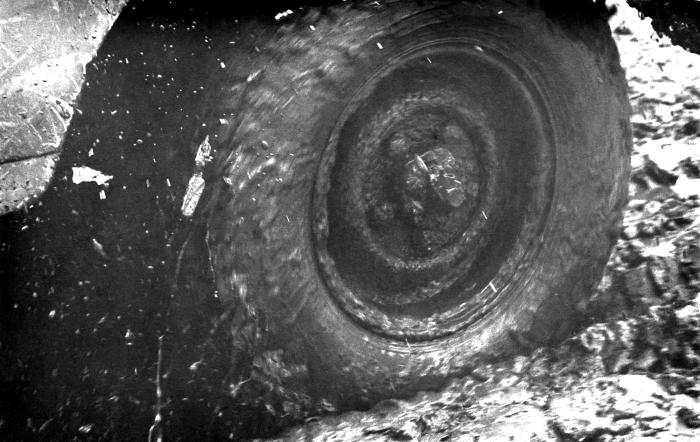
This photograph, by Pierre Claquin, M.D., B.A.C., who at the time was a member of the World Health Organization's Smallpox Eradication Program, was provided by former E.I.S. officer, Stanley O. Foster M.D., M.P.H., and was one of a series entitled 'The Story of One Smallpox Jeep', which depicted the travails faced by the jeep, and its occupants of public health practitioners, as they road through the Bangladesh countryside in an attempt to eradicate smallpox from the country. This image showed how difficult the terrain was to negotiate, as this jeep tire was spinning in the mud, trying to gain traction.